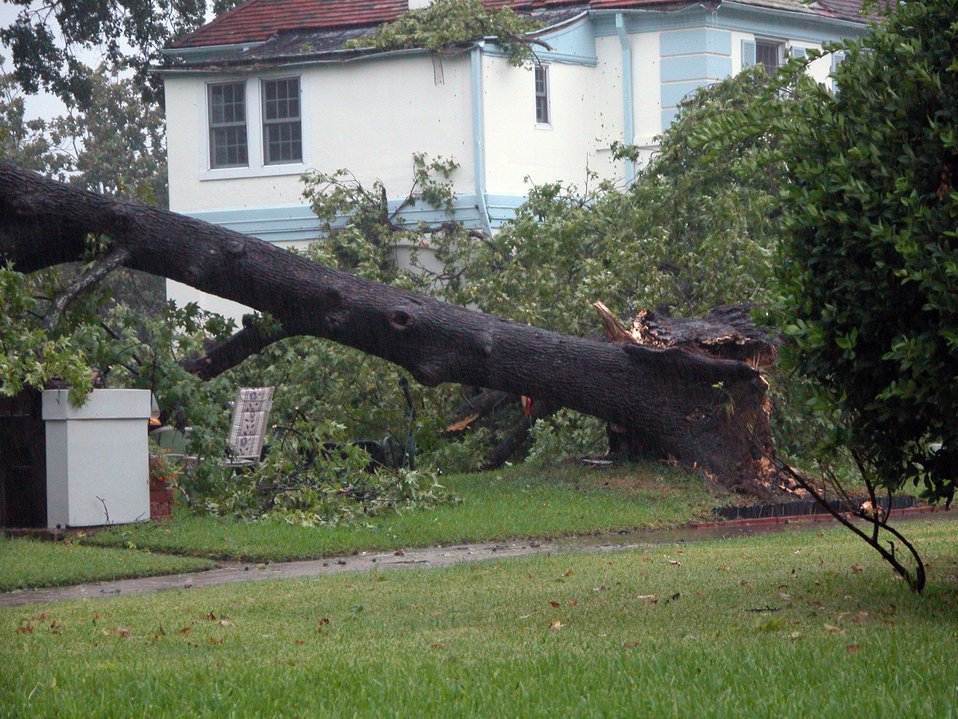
Downed trees damage historic homes

BARKSDALE AIR FORCE BASE, La., -- A tree lies splintered here after it was felled Sept. 24 by Hurricane Rita. Several historic homes on base were damaged by downed trees. .